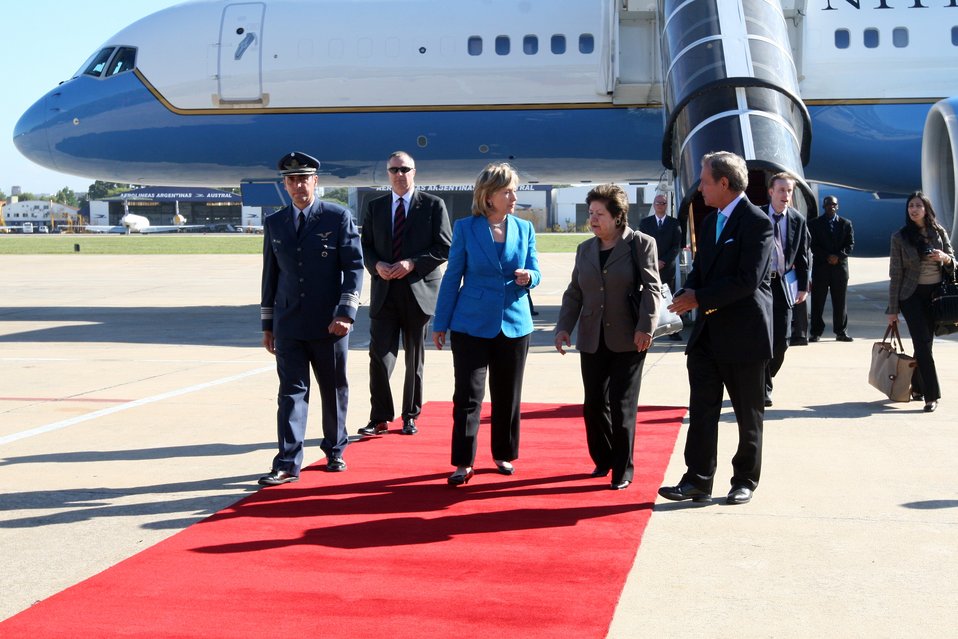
Secretary Clinton Wheels Down in Buenos Aires, Argentina

U.S. Secretary of State Hillary Rodham Clinton 'wheels down' in Buenos Aires, Argentina March 1, 2010.